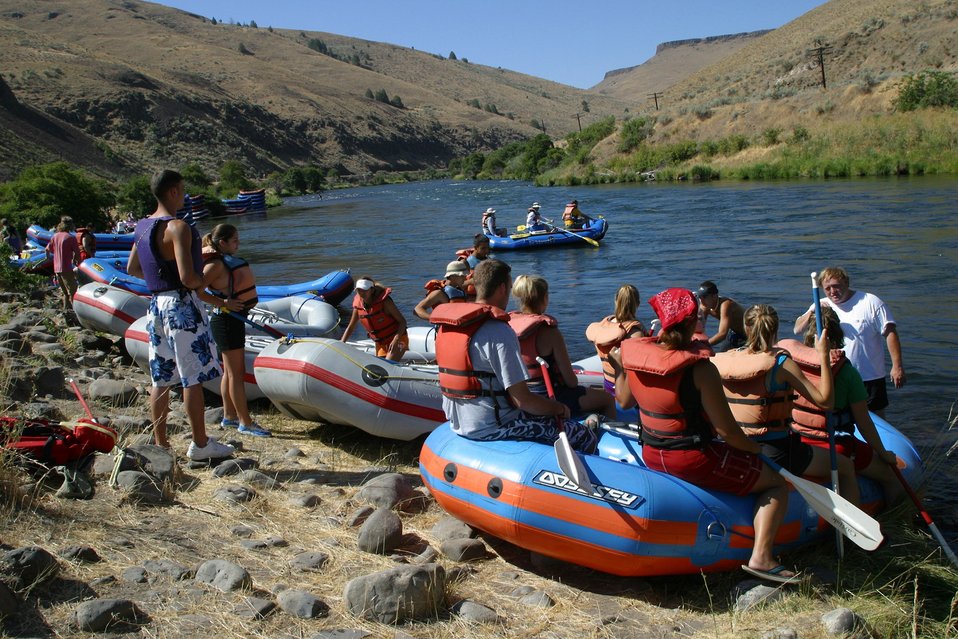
Over 200,000 people a year float the Lower Deshutes River.